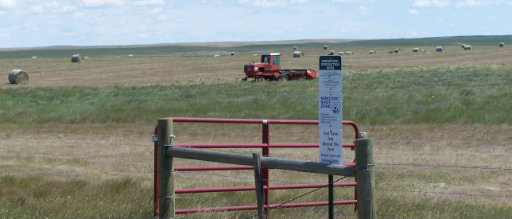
Haying on Korsbeck WPA, Bowdoin NWR